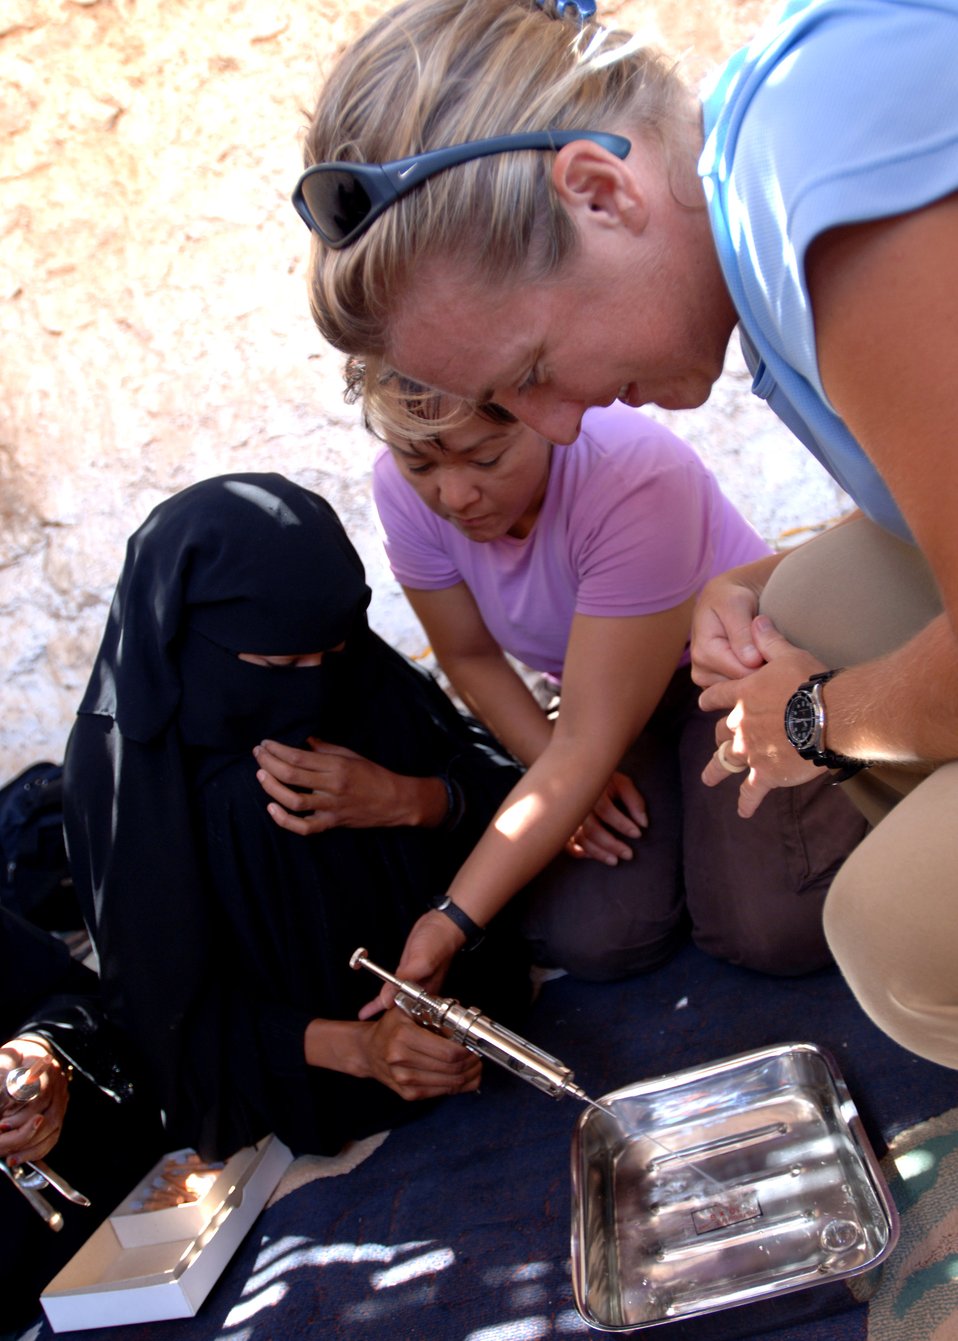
Veterinary project has big impact on small island

Army Capt. Gwynne E. Kinley a doctor of veterinary medicine, right, and Air Force public health officer Maj. Pauline Lucas help an animal health worker use an auto injector during a veterinary civic action project on the island of Socotra, Yemen. The objective of the project was to teach women on the island basic animal husbandry techniques. Those learned skills will be used to improve the country's overall livestock health and productivity. The officers are part of the Combined Joint Task Force-Horn of Africa.